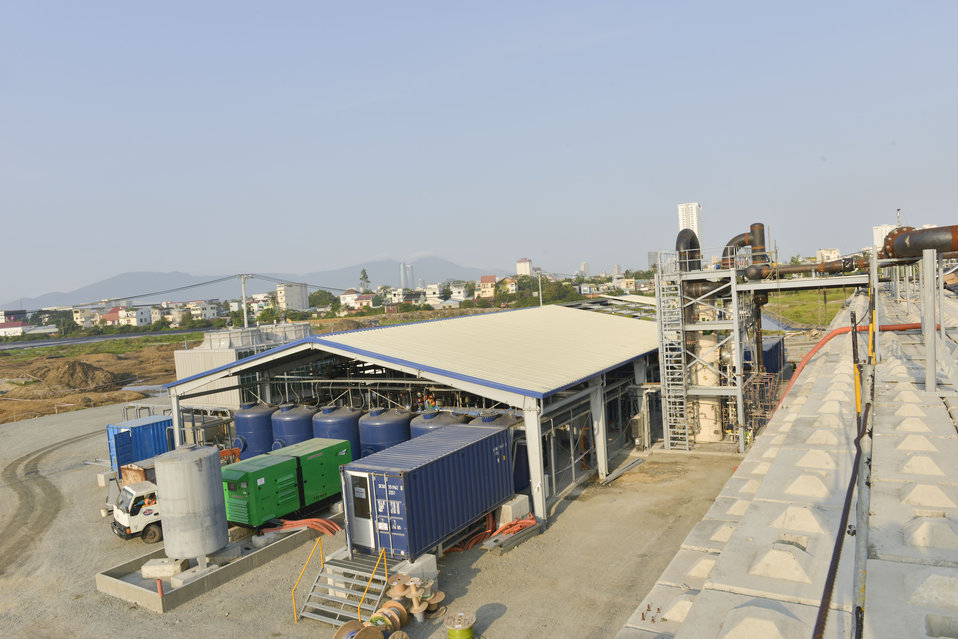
The liquid and vapor treatment plant/system constructed north of the containment structure.

March 24, 2014.